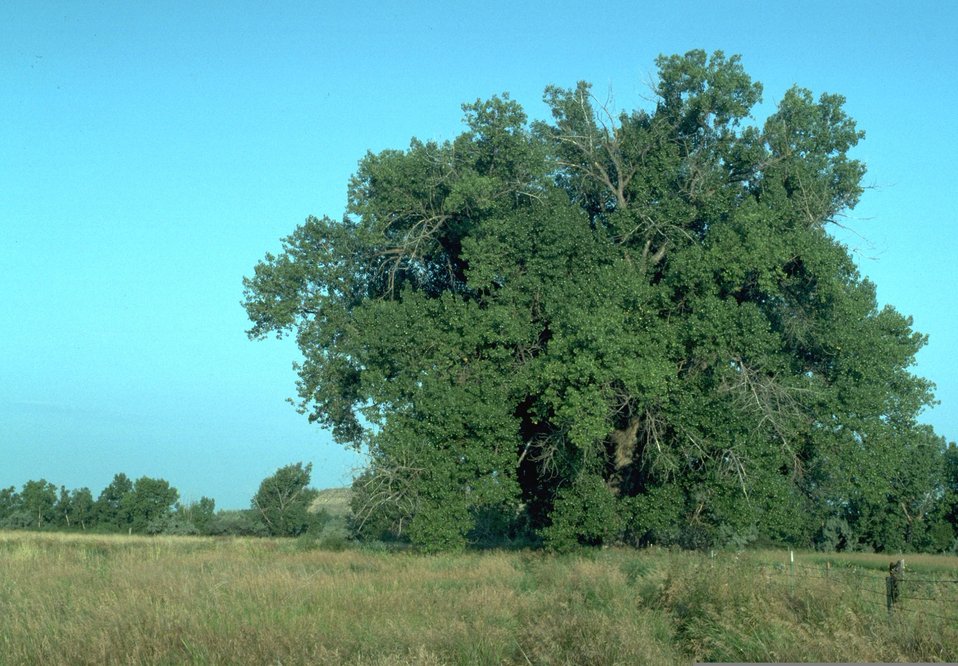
Cottonwood tree